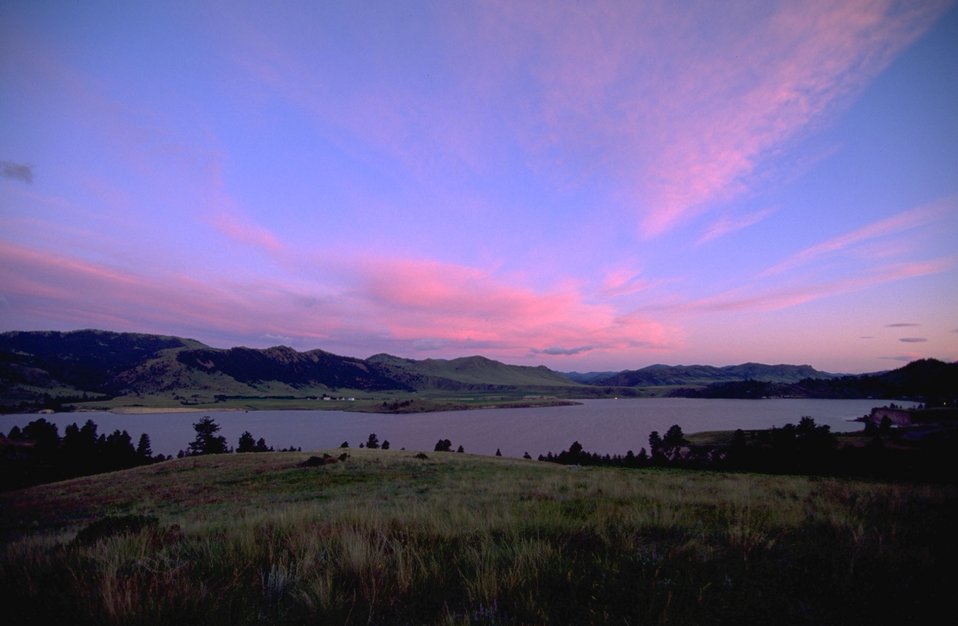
Holter Lake sunset